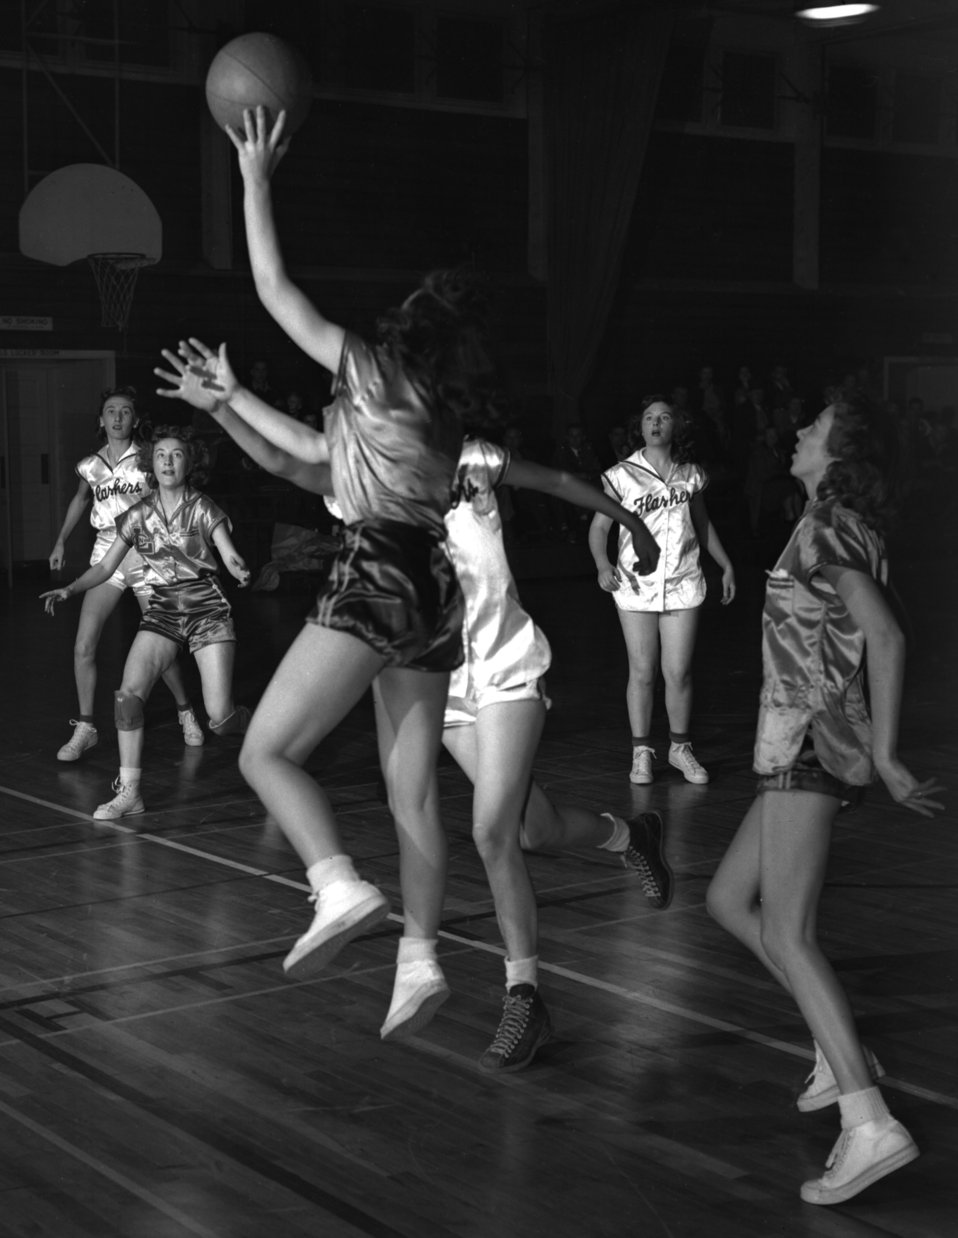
Women's Basketball Monsanto Vs. Maryville

4224g Oak Ridge Tennessee 1-3-1948 DOE photo by Ed Westcott